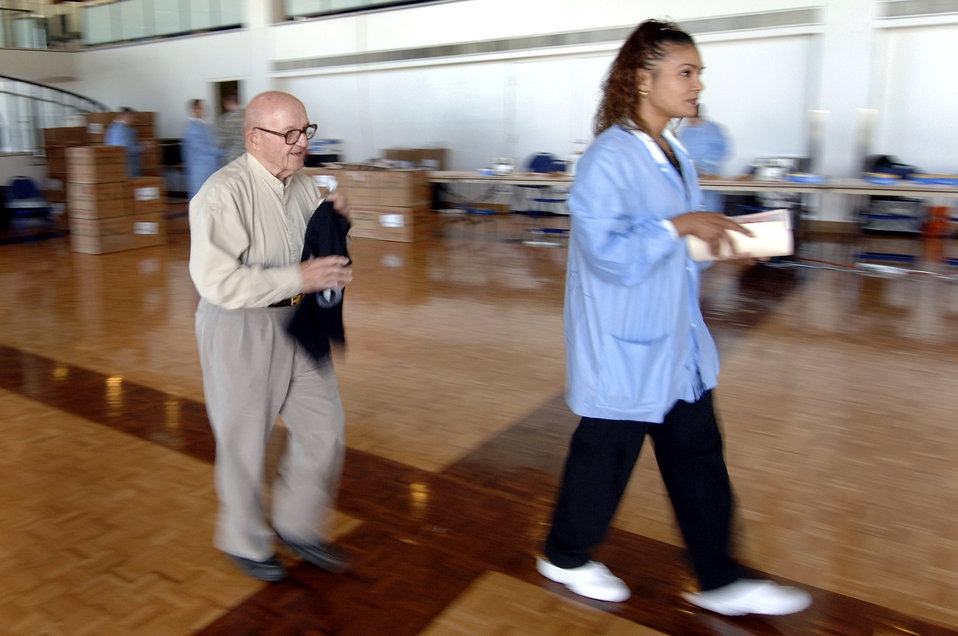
Giving the gift of life

Retired Army Capt. George Froemke, a veteran of World War II, South Korea and Vietnam, is escorted to donate blood during a blood drive held in the Arnold Hall ballroom Sept. 19 at the U.S. Air Force Academy in Colorado. Blood collected will benefit armed forces members by helping to meet the urgent needs of wounded Americans in Iraq and Afghanistan.